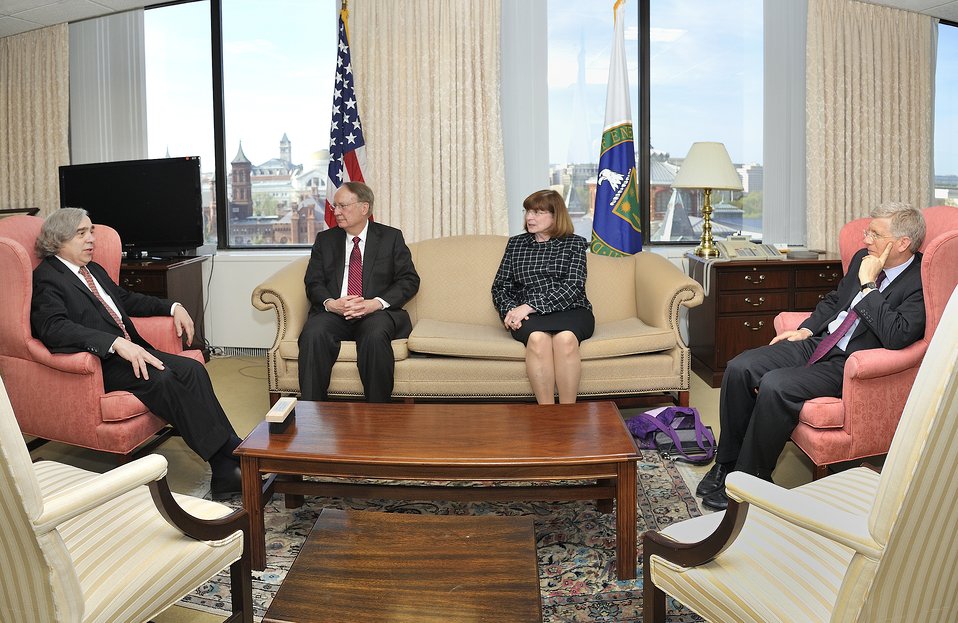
Secretary of Energy Ernest Moniz swore in Frank G. Klotz as the Department of Energy’s Undersecretary for Nuclear Security and NNSA Administrator in a private ceremony this afternoon. General Klotz was joined by his wife, Nancy, and Acting Administrator Bruce Held on April 17, 2014